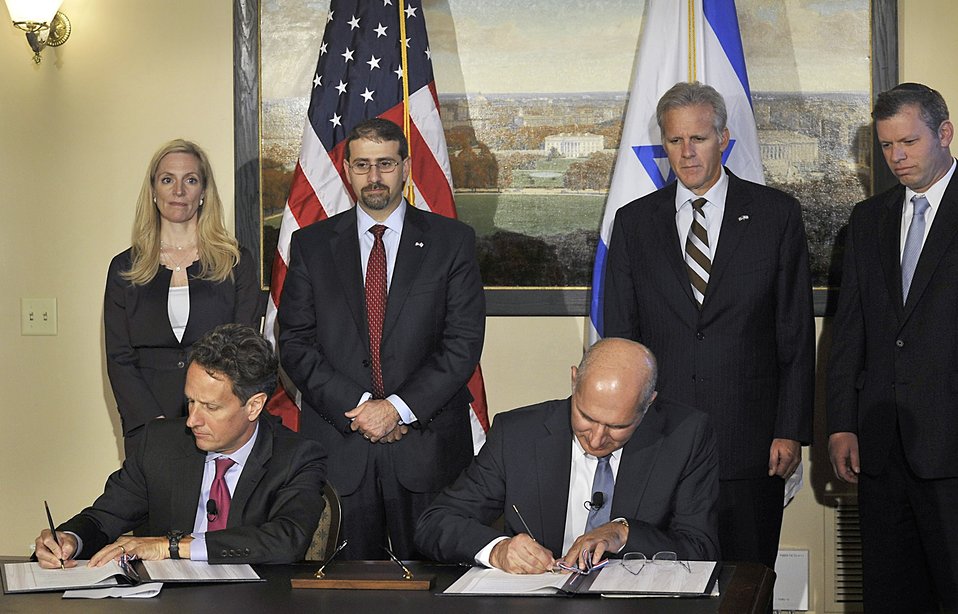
Secretary Geithner marks extension of the U.S.-Israel Loan Guarantee Program

U.S. Treasury Secretary Tim Geithner and Israeli Finance Ministry Director General Doron Cohen signed a Memorandum of Understanding establishing a new framework for administering the recently extended U.S.-Israel Loan Guarantee program at an event in the Diplomatic Room of the U.S. Department of the Treasury.